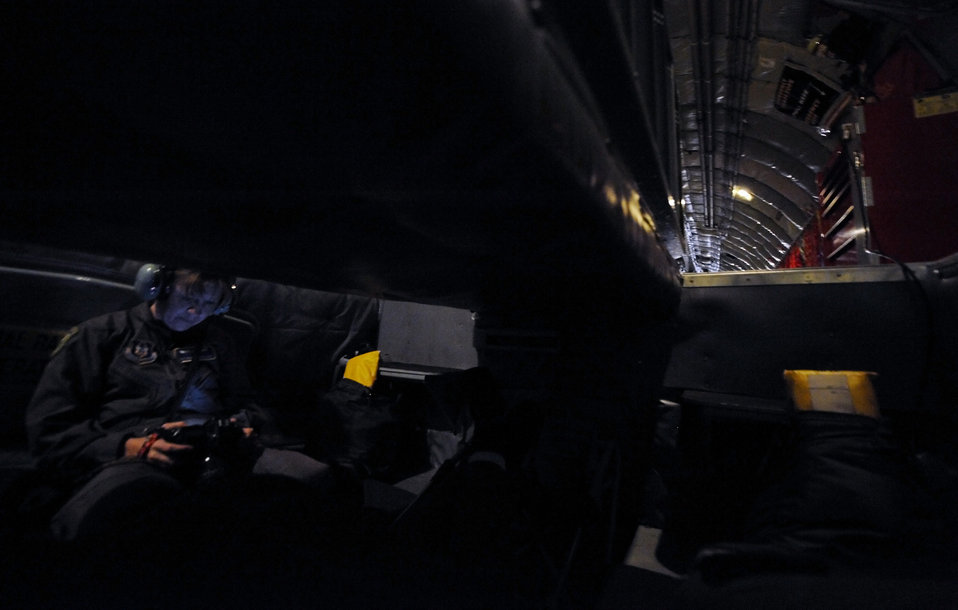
Photographer captures mission

Tech. Sgt. Michelle Desrochers reviews photos on the back of her camera while sitting in the boom pod of a KC-135R Stratotanker from the 336th Air Refueling Squadron July 30 during a refueling mission. Sergeant Desrochers is an aerial still photographer from 4th Combat Camera Squadron. The 336th ARS and Combat Camera are from the 452nd Air Mobility Wing out of March Air Reserve Base, Calif.